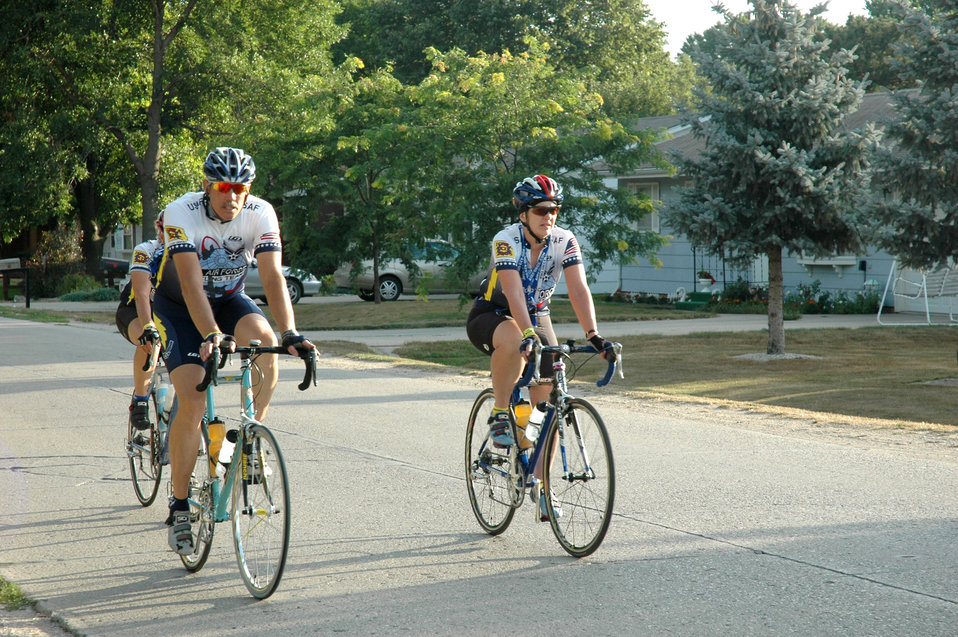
Cancer doesn't stop Air Force cyclists from crossing Iowa

Pamela Vineyard and her boyfriend, Dave Boucher, begin day two of the Register's Annual Great Bike Ride Across Iowa, or RAGBRAI, July 24.